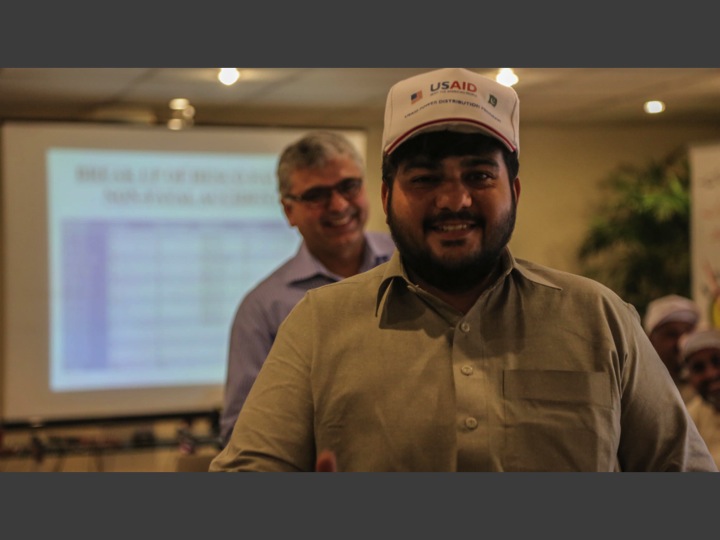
Successful lineman trainee at the end of training session